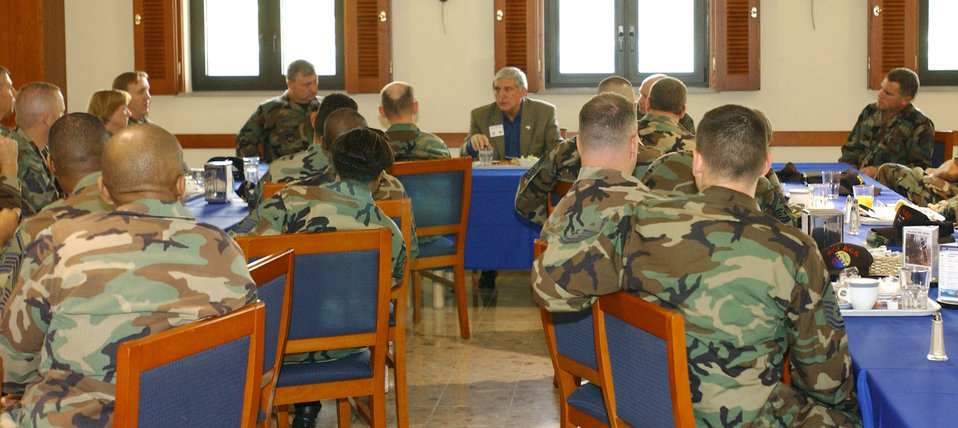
On a mission for Airmen

Mr. Bob Largent speaks with chiefs and first sergeants at La Dolce Vita Dining Facility, Aviano Air Base, Italy Oct. 25, 2006. Mr. Largent, Air Force Association chairman of the board, visited Aviano to spend time with Airman and get a view of how the force is doing.